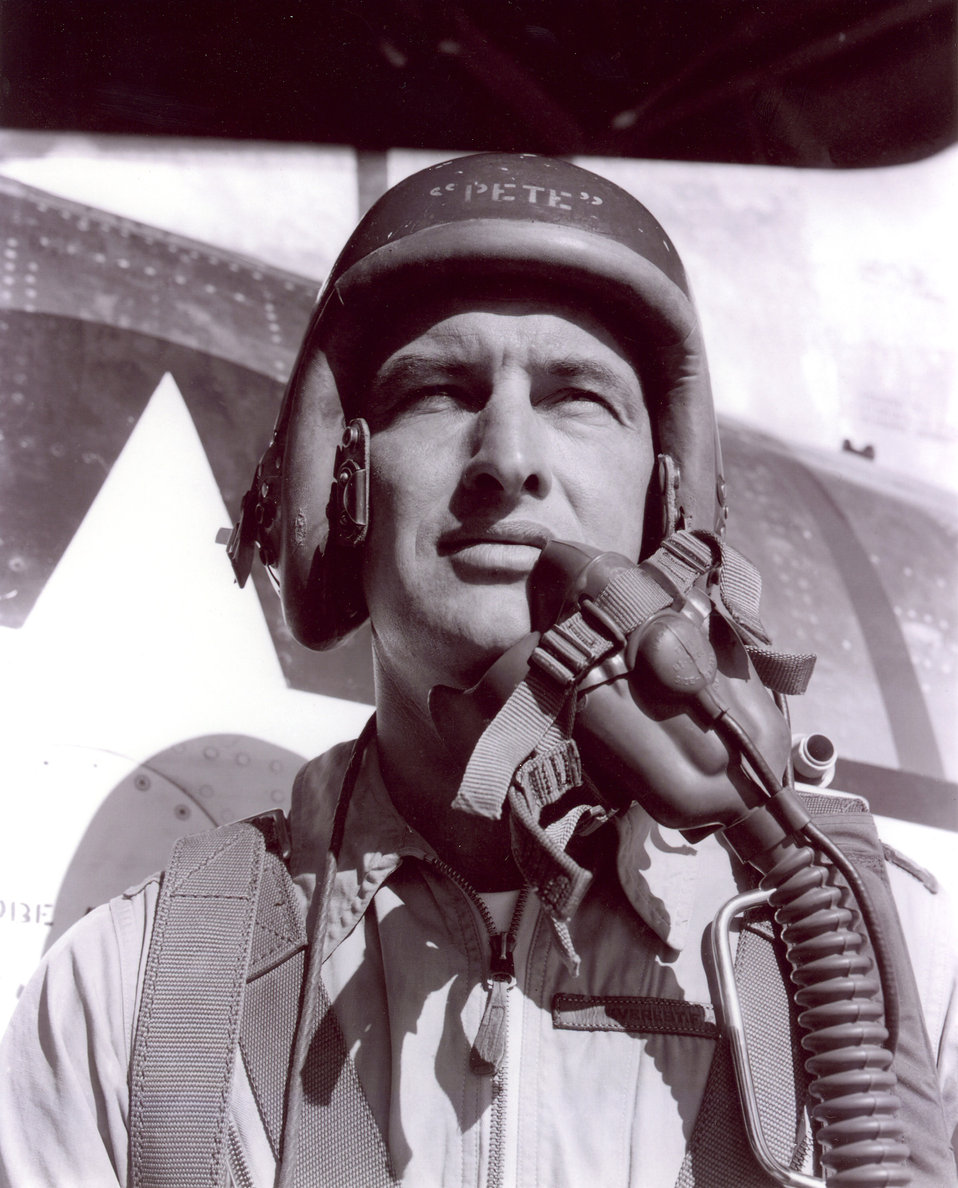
Lt. Col Frank K.